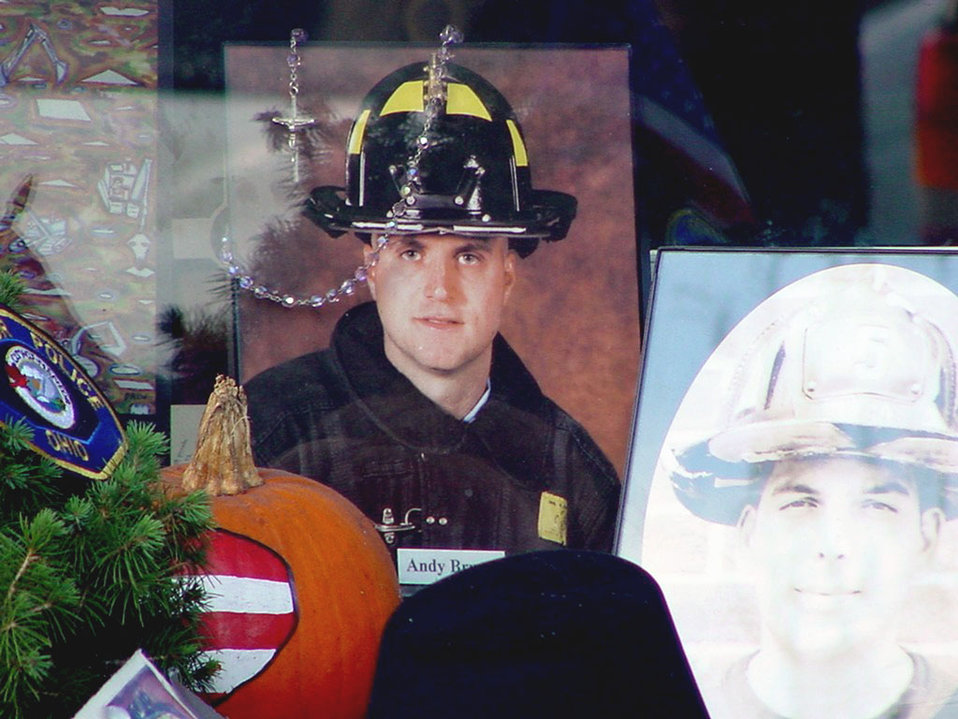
Brunn

AL UDEID AIR BASE, Qatar - Staff Sgt. Andy Brunn was a New York City firefighter who died while trying to help others at the World Trade Center on Sept. 11, 2001. Master Sgt. Joseph Rizzo, who served with Brunn in the New York Air National Guard, is currently deployed here. Rizzo said losing Brunn was like losing a brother.